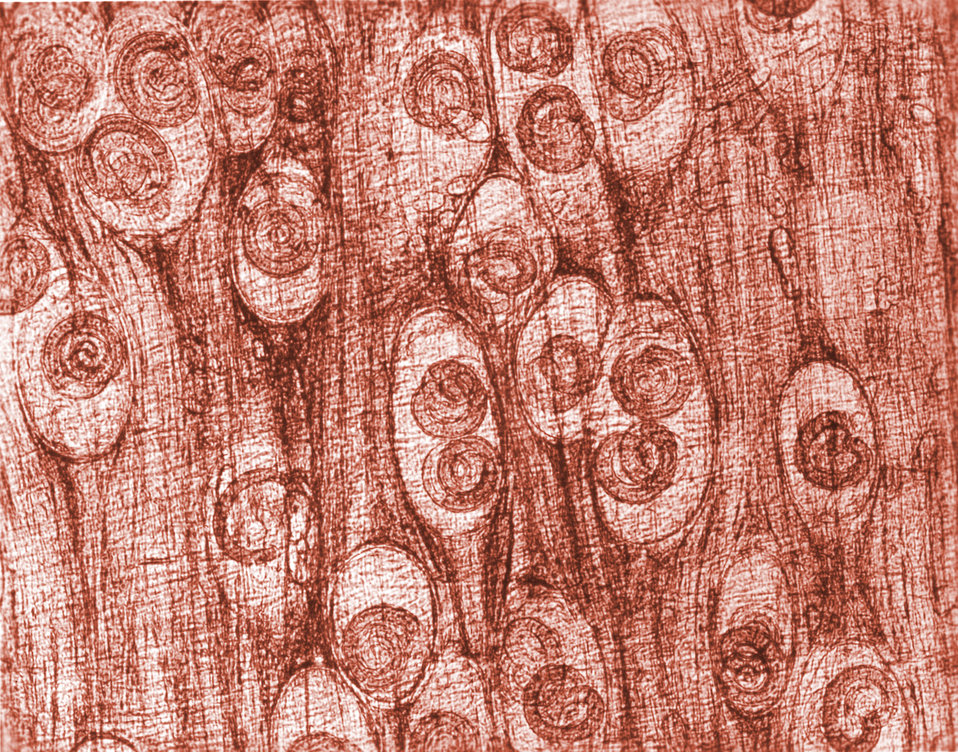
This is a photomicrograph depicting numbers of Trichinella spiralis cysts seen embedded in a muscle tissue specimen, in a case of trichinellosis.Trichinellosis is acquired by ingesting meat containing cysts (encysted larvae) of Trichinella sp. roundworm (nematode) parasites.